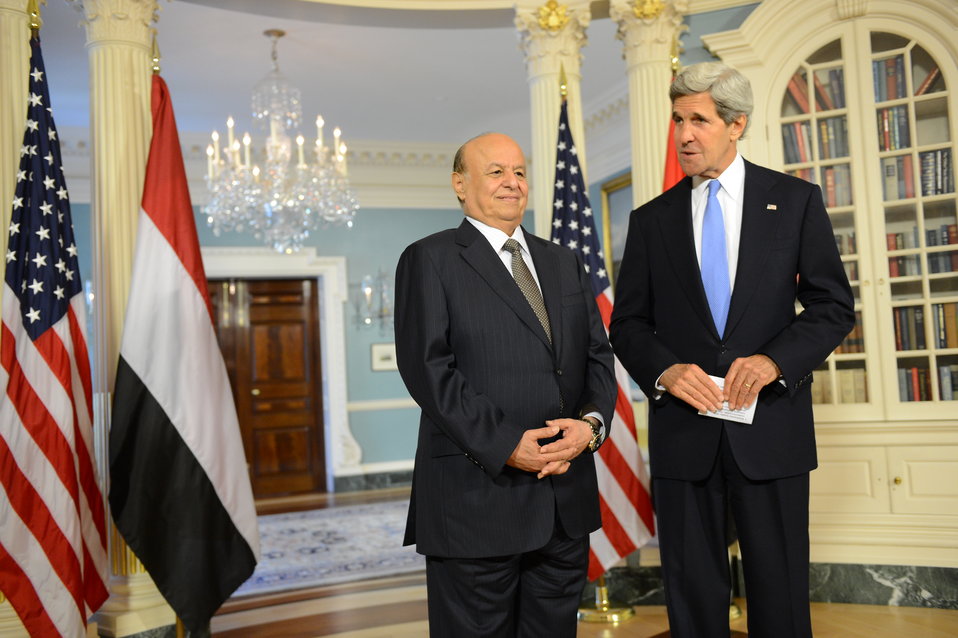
Secretary Kerry and Yemeni President Hadi Address Reporters

U.S. Secretary of State John Kerry and Yemeni President Abdo Rabbo Mansour Hadi address reporters before their bilateral meeting at the U.S. Department of State in Washington, D.C., on July 29, 2013.